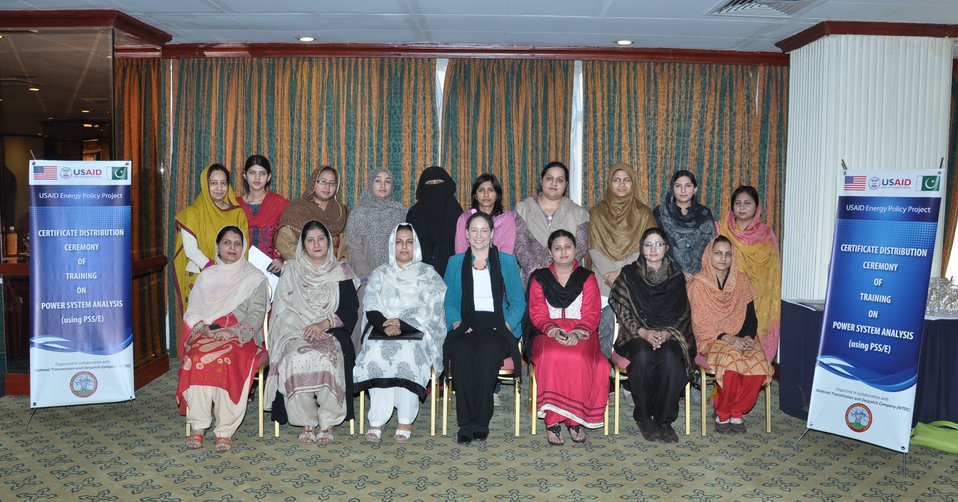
Certificate Distribution Ceremony of Training on Power System Analysis

Melissa Knight, Energy Office Director USAID Pakistan, with two female participants(of NTDC) of the Power System Analysis Training and the female staff of LESCO at the Certificate Distribution Ceremony of Training on Power System Analysis organized in Lahore on Februrary 28,2012.
The Power System Analysis Training was organized by Energy Policy Project as part of its activities for the power sector entities capacity building program and supporting energy sector reforms.